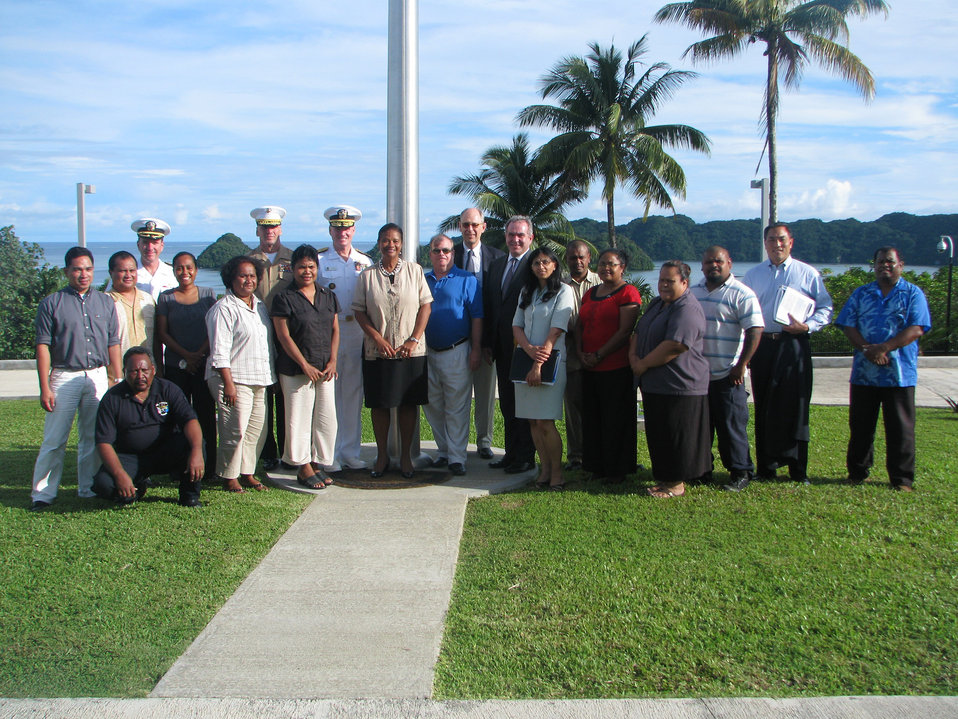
Assistant Secretary Campbell Poses for a Photo With Ambassador Reed-Rowe and Embassy Staff

Assistant Secretary of State for East Asian and Pacific Affairs Kurt Campbell poses for a photo with U.S. Ambassador to Palau Helen Reed-Rowe, left center, and members of her team at the U.S. Embassy to Palau in Koror, Palau, on June 30, 2011. Assistant Secretary Campbell, right center, leads a U.S. delegation to nations throughout the South Pacific to engage in discussions to enhance bilateral political, economic, and security relations in the region.. The U.S. delegation includes Adm. Patrick Walsh, commander of U.S. Pacific Fleet, Office of the Secretary of Defense South/Southeast Asia Principal Director, Marine Corps Brig. Gen. Richard Simcock, and U.S. Agency for International Development (USAID) Assistant Administrator Nisha Biswal.